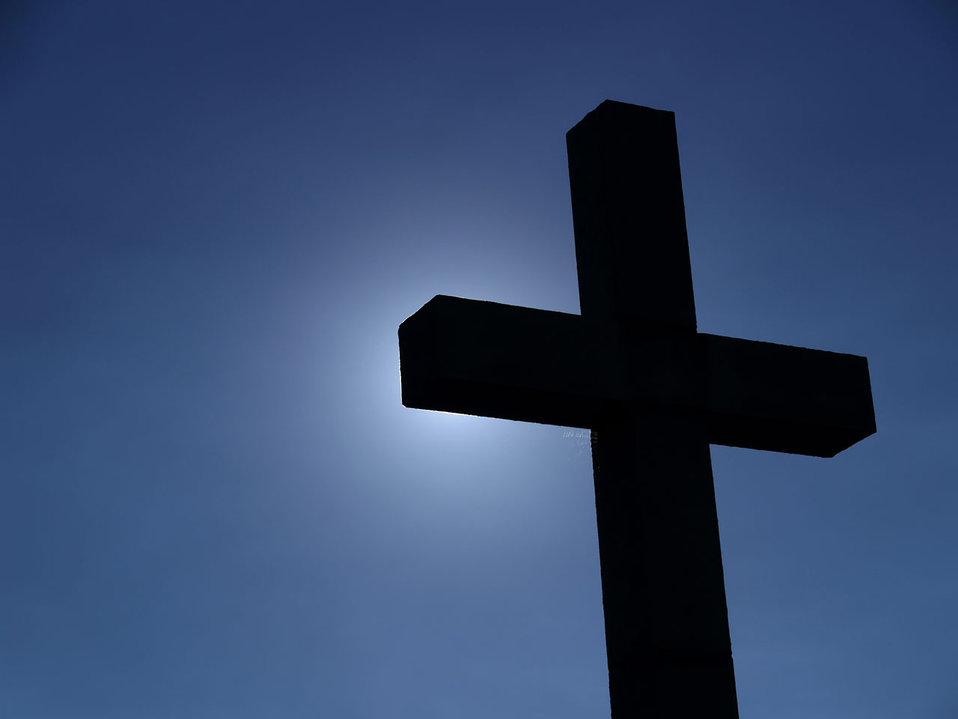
Cross against the light..